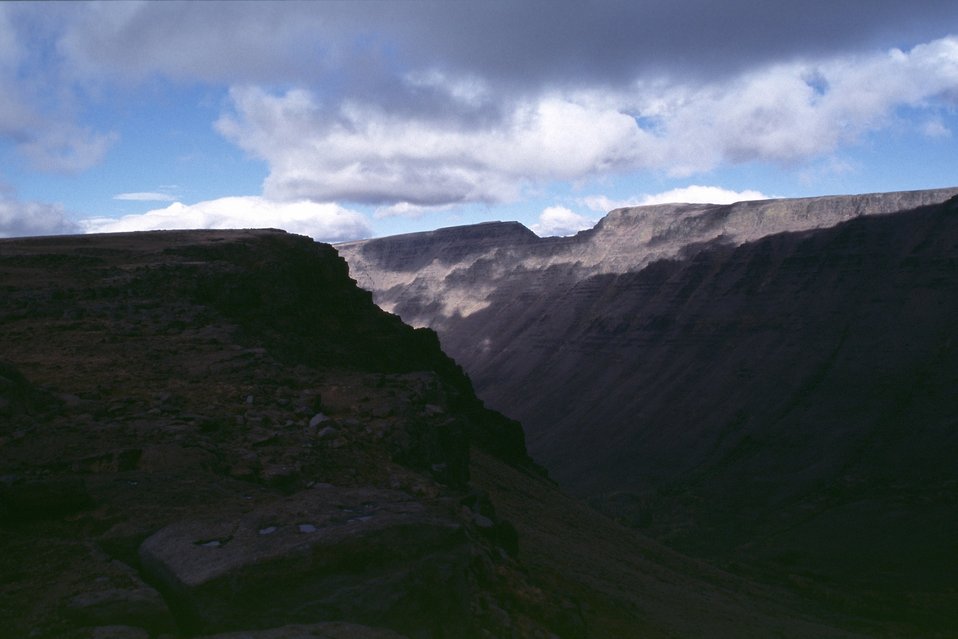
Kiger Gorge at Steen's Mountain.